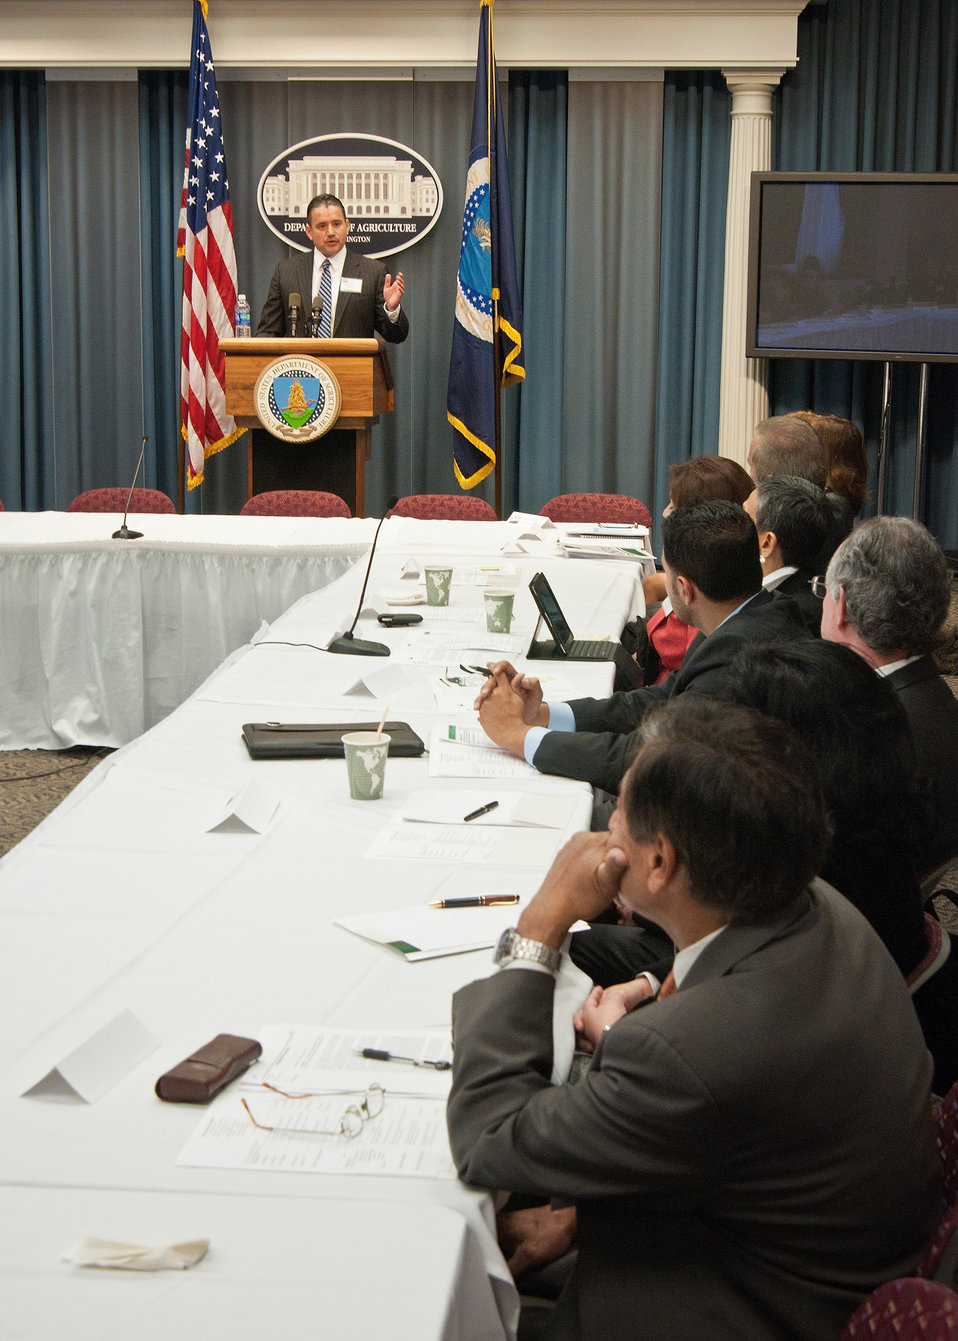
Oscar Gonzales, Jr., Deputy Assistant Secretary for Administration championed the United States Department of Agriculture Hispanic Roundtable at the United States Department of Agriculture, Monday, December 5, 2011 in Washington, DC. The roundtable focused on recruitment, retention and employee development for the purpose of developing the USDA Hispanic recruitment Plan. The roundtable hosted several national Hispanic partners and recognized USDA Hispanic organizations and associations.